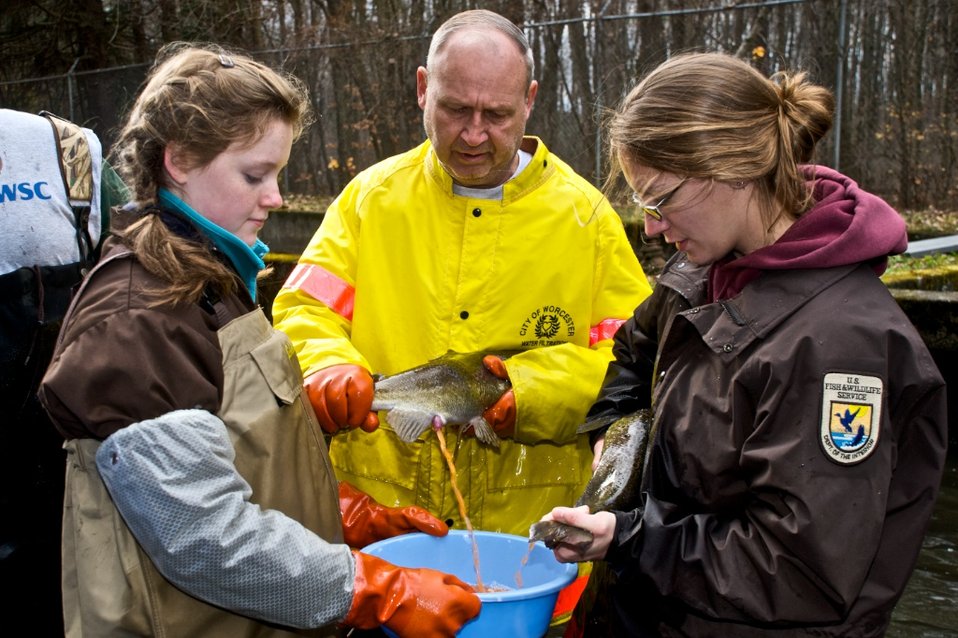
Richard Cronin National Salmon Station

Volunteers harvesting salmon eggs at the Richard Cronin National Salmon Station in Sunderland, MA.